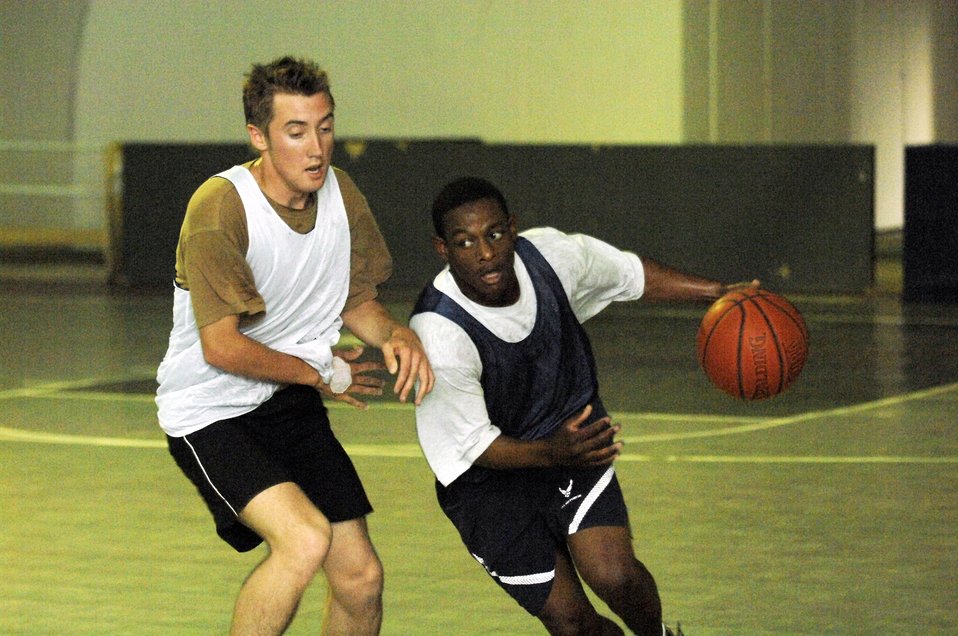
Coalition forces compete at Ali Base

Senior Airman Michael Gray drives past an Australian team defender during the first-ever coalition games Aug. 20 at Camp Adder, Iraq. The Air Force team took third place in the event. The coalition games brought together different sport teams from the Air Force, Army, Navy, Australians and the Romanians to compete for the bragging rights as the best on base. The Air Force came out on top taking first place in five events. Airman Gray is a member of the 407th Security Forces Squadron at Ali Base, Iraq.